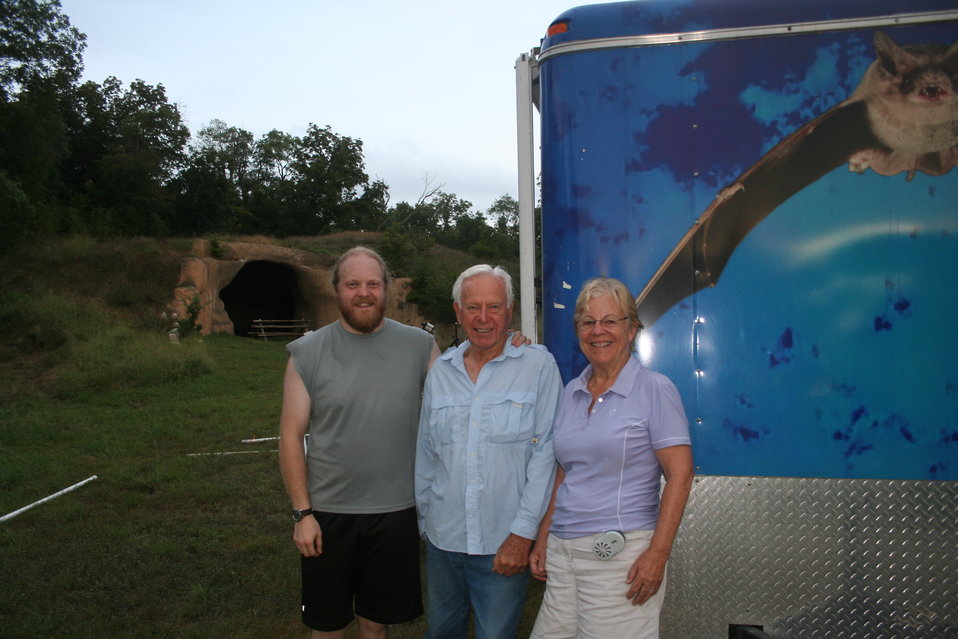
Nate Fuller, David Bamberger and Joanne